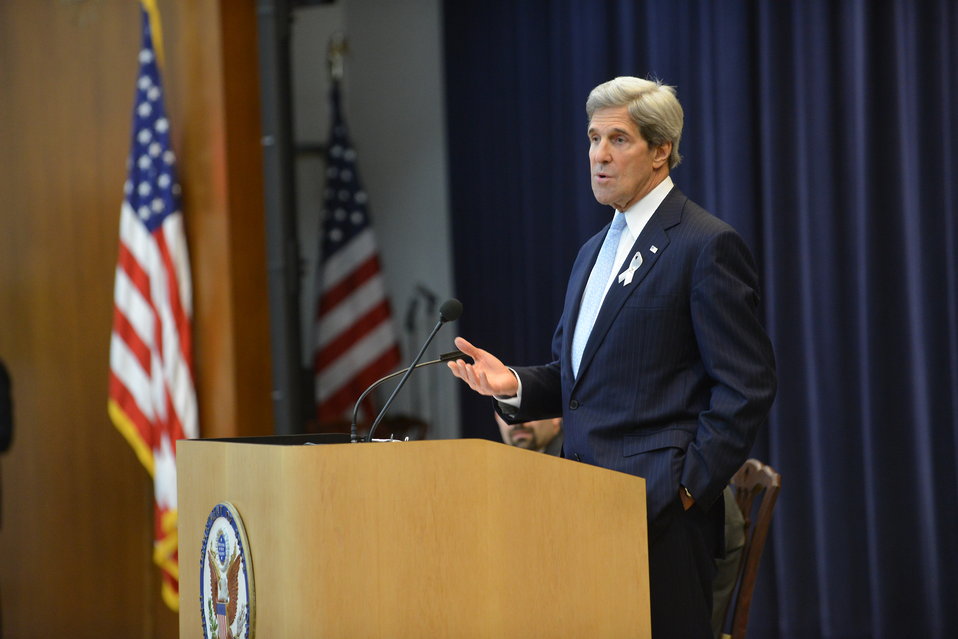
Secretary Kerry Delivers Remarks to the 171st FS Generalist Class

U.S. Secretary of State John Kerry delivers remarks to the 171st FS Generalist Class at the U.S. Department of State in Washington, D.C., on May 3, 2013.